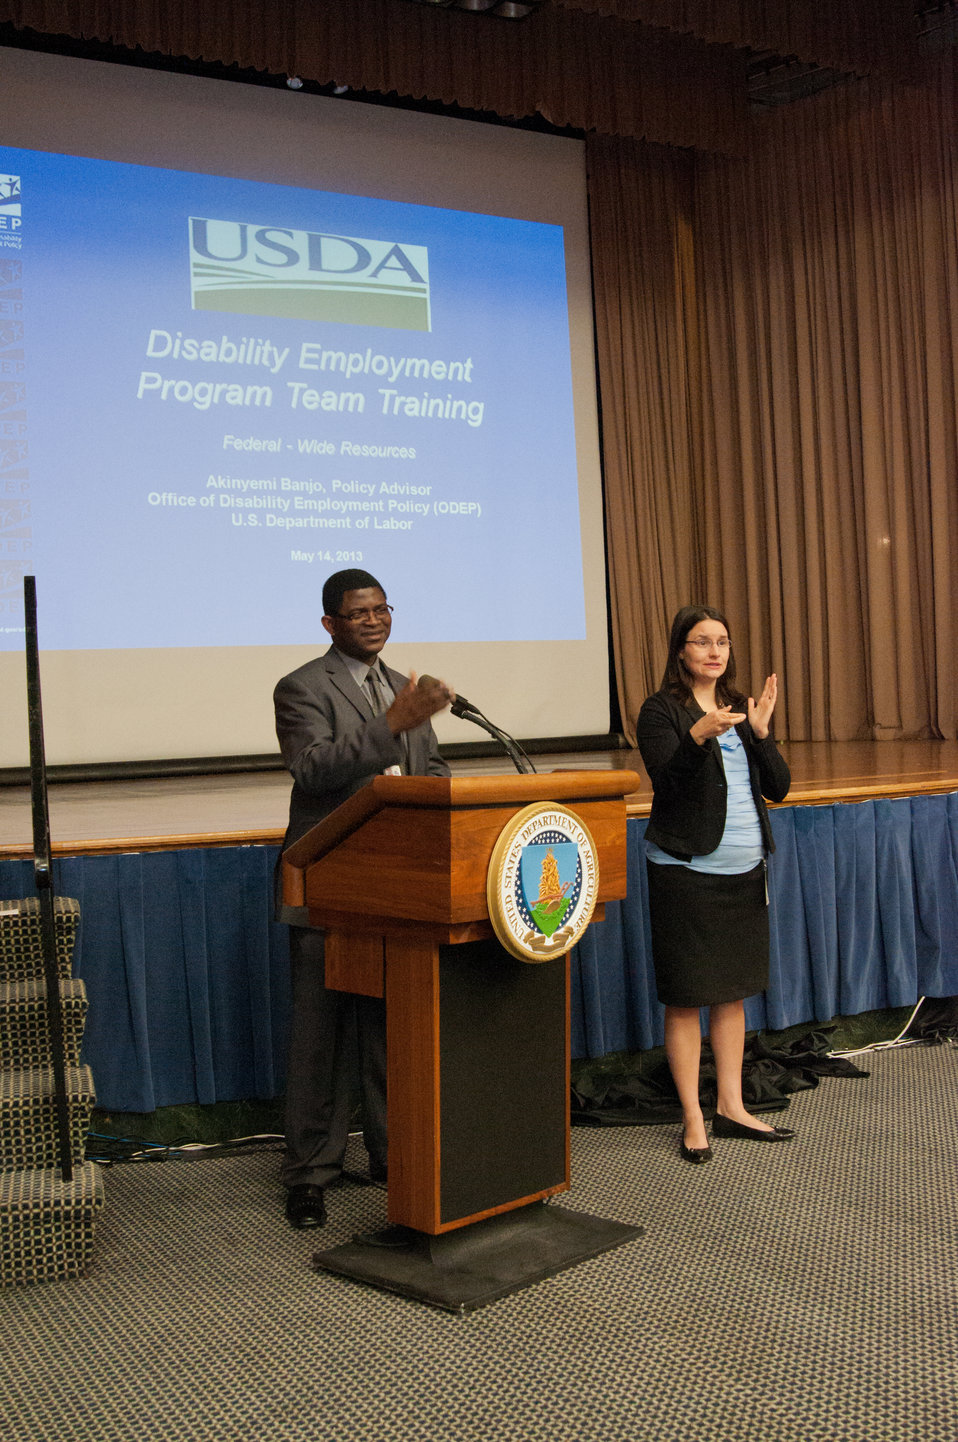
Department of Labor Office of Disability Employment Policy representative Akinyemi Banjo discusses Federal wide resources available to disability employment program managers at the U.S. Department of Agriculture (USDA) Office of Human Resources Management (OHRM) Disability Employment Program Team Training at USDA in Washington, D.C. on Tuesday, May14, 2013. Susie Needham interprets for hearing-impaired employees during the event.